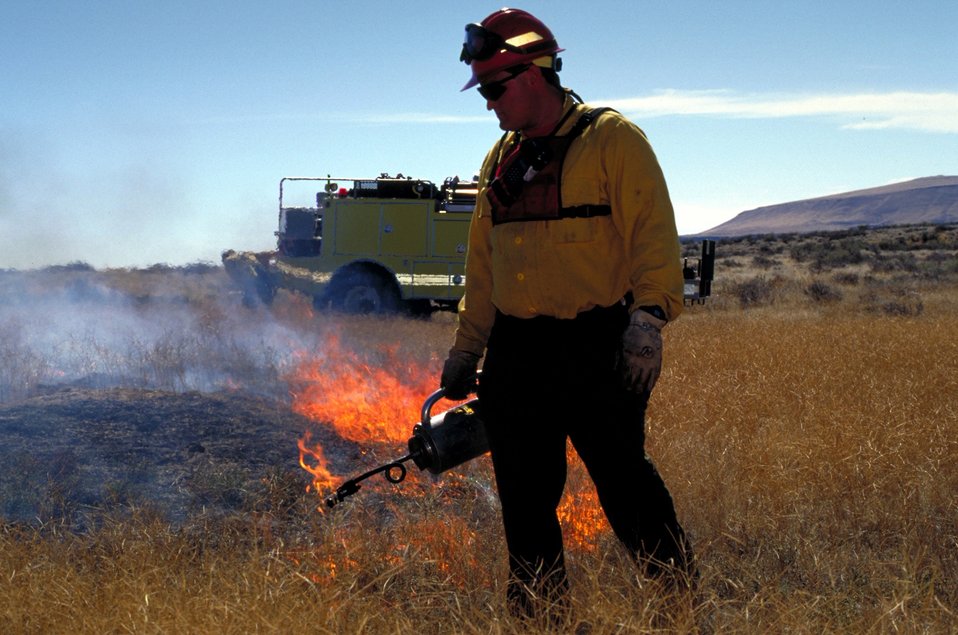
Prescribed burn Fire Season 2000 Lower Snake River District LSRD